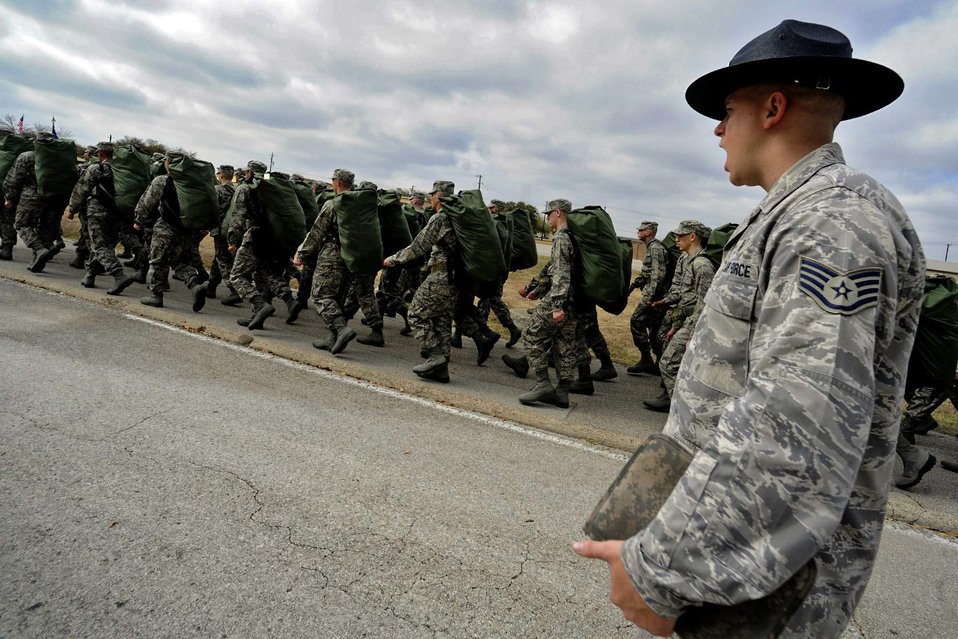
Basic training

Staff Sgt. Robert George, a military training instructor at Lackland Air Force Base, Texas, marches his unit following the issuance of uniforms and gear. Recruits are molded into warrior Airmen through a recently expanded Air Force Basic Military Training program.